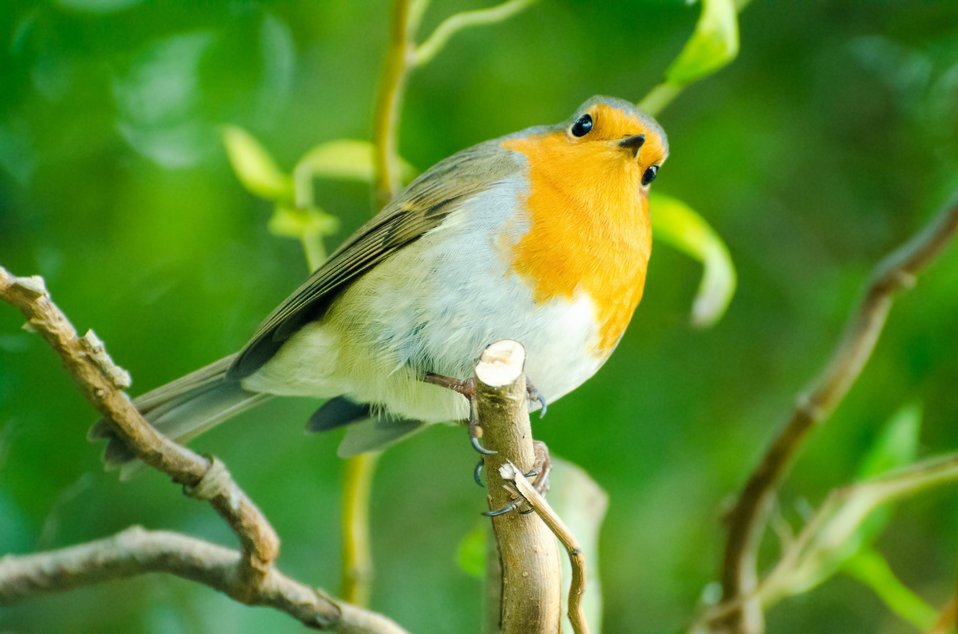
Bird on the branch.